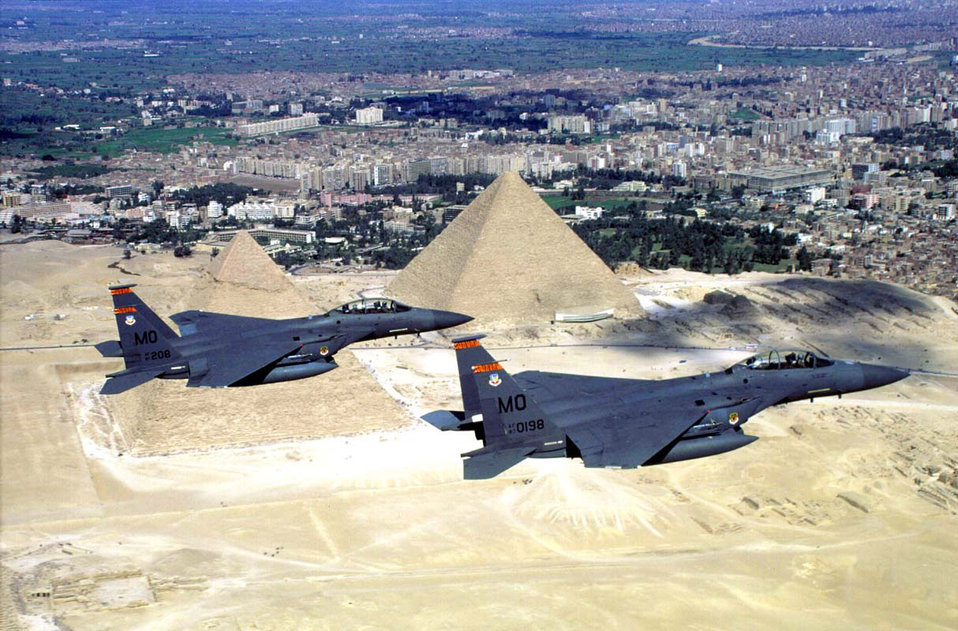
Wonders of the world

OVER EGYPT -- A pair of F-15E Strike Eagles, fly over the pyramids.